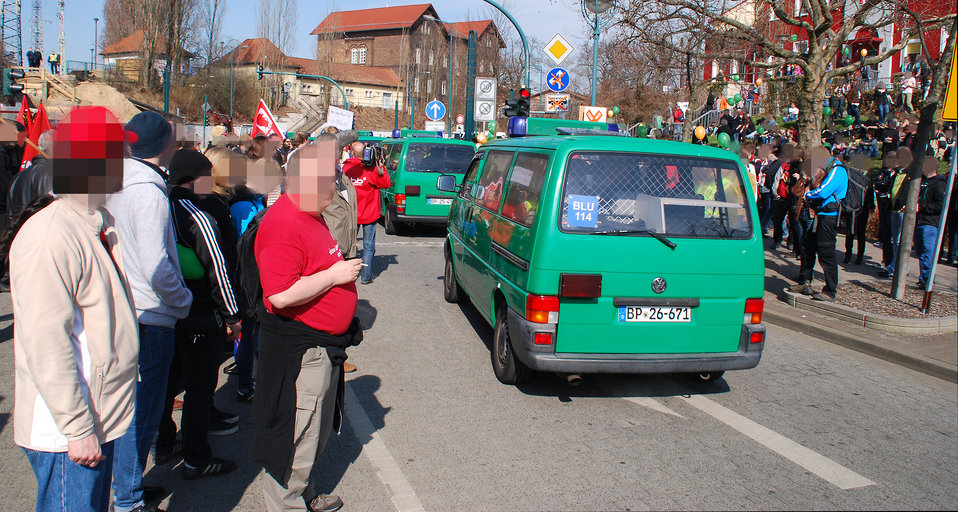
Proteste gegen den Nazi-Aufmarsch am 24.3.2012 in Frankfurt (Oder)